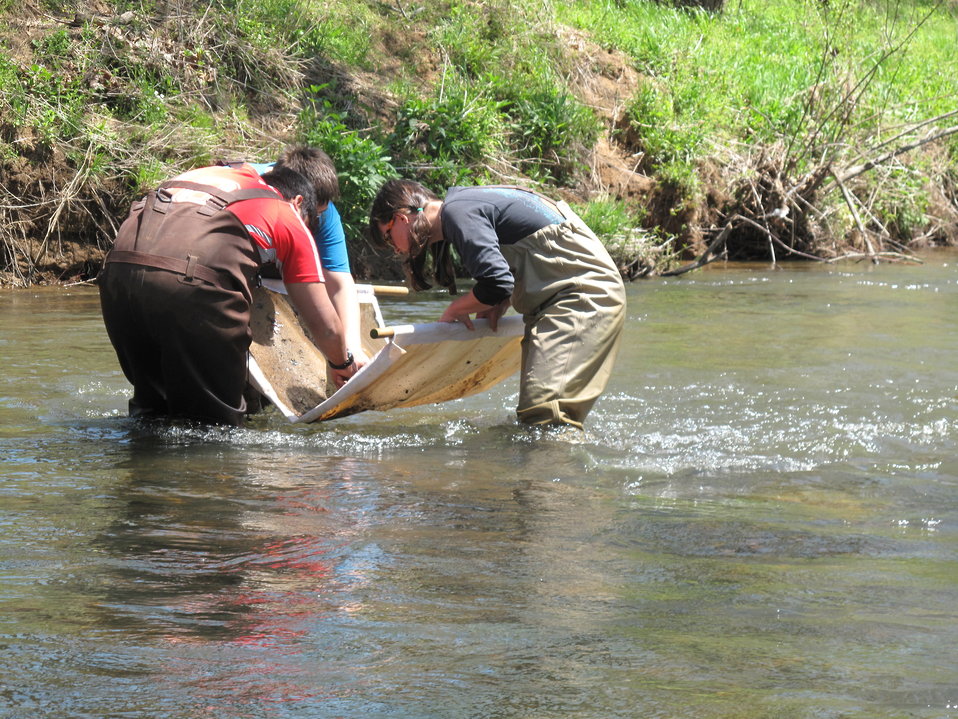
Jenny Sanders helps students find macroinvertebrates

Over the course of four days in late April 2014, every eighth grade student at North Carolina’s Macon Middle School, Highlands School, Nantahala School, and Trimont Christian Academy visited Cartoogechaye Park, in Macon County, to learn about rivers.

The students rotated through four stations:
1) water chemistry where they had the opportunity to help test water from Cartoogechaye Creek to gain an idea of the stream’s water quality;
2) aquatic insects, where students collected and identified animals like mayflies and caddisflies, learning how life in the river reflects the health of the river
3) fish, where they were able to collect and identify fish in the stream, and then
4) stream flow, where they measured and calculated the downstream movement of water, including the velocity of the water and the total volume of water being moved per second.

The event was organized by the University of Georgia's Coweeta Long-Term Ecological Research (LTER) Program, which is based at the USFS Coweeta Hydrologic Laboratory. (coweeta.uga.edu/), with sizable support from the Land Trust for the Little Tennessee. Other supporters include the U.S. Fish and Wildlife Service, N.C. Natural Heritage Program, and N.C. Division of Water Resources.